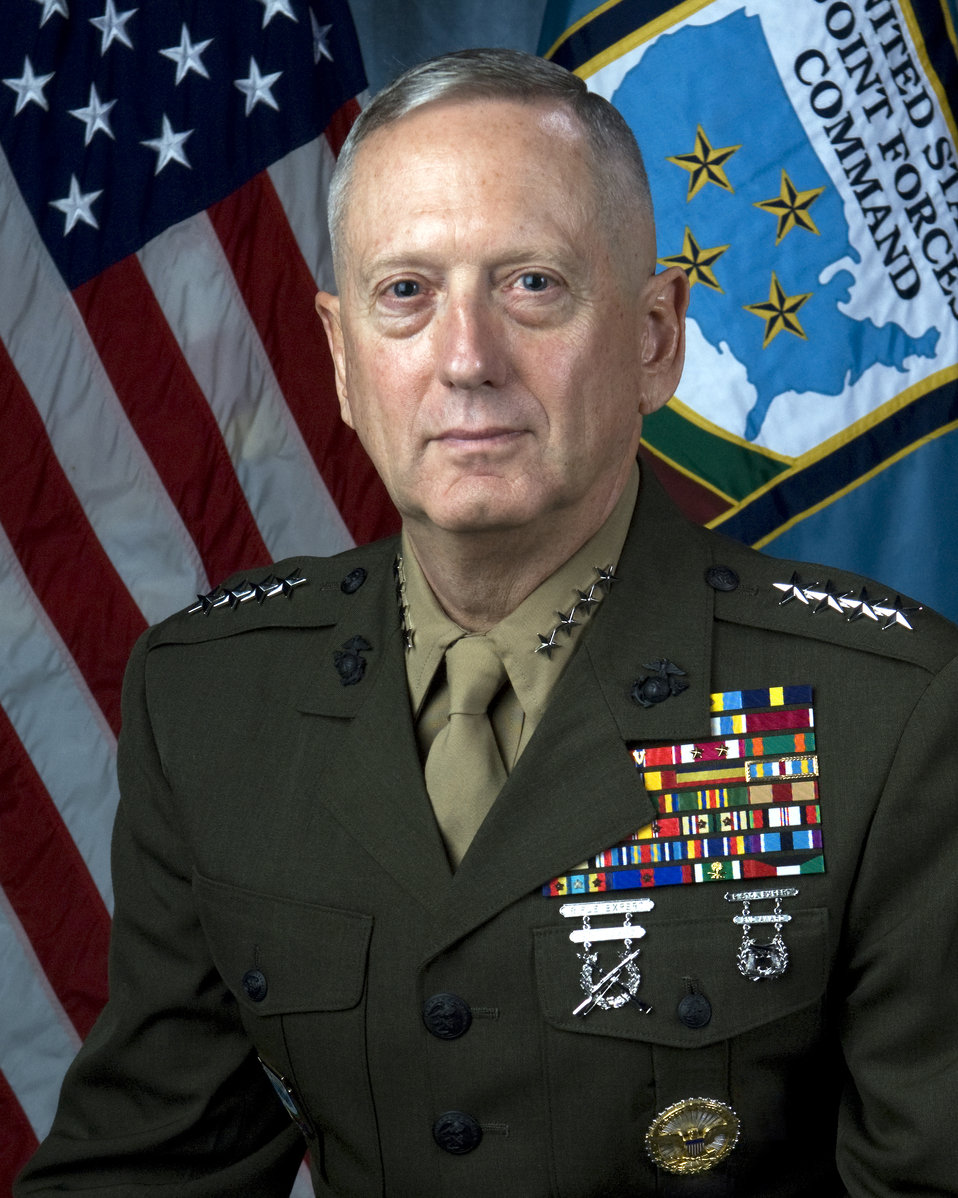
General Mattis confirmed

The Senate has confirmed Marine Gen. James N. Mattis as the next commander of U.S. Central Command.